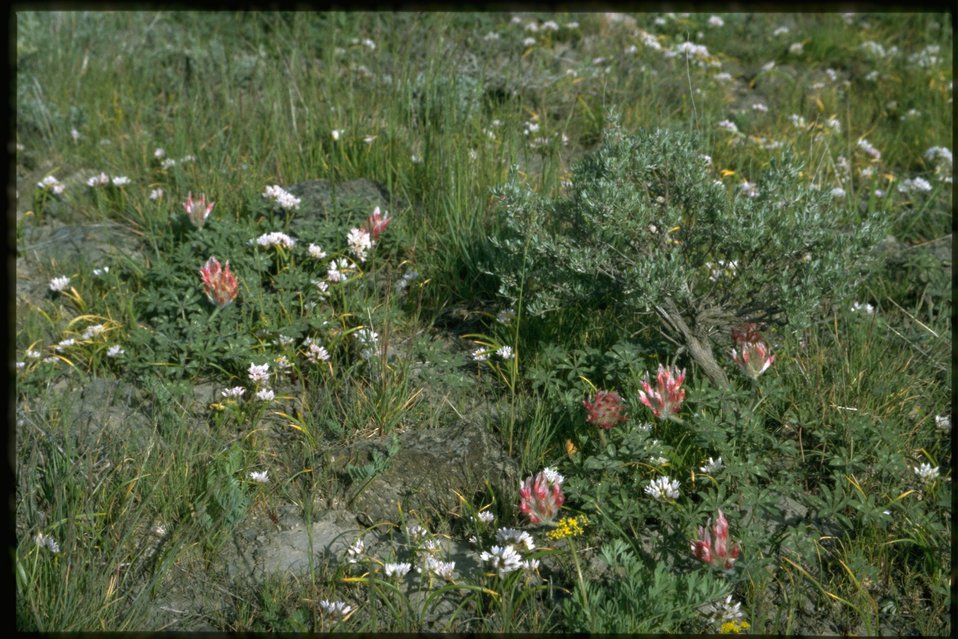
Farshot of Tolmie's Onion wildflowers and Big-headed Clover.